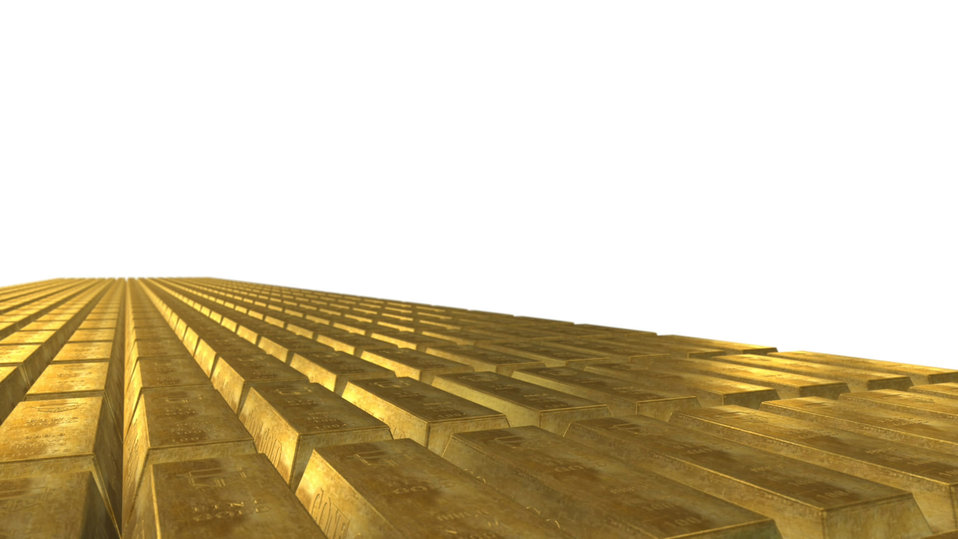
Gold bars

Gold bullion in the future.